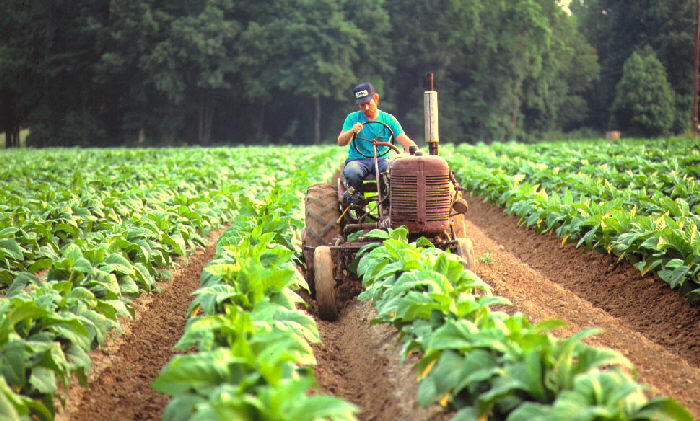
Tobacco farmer on tractor in tobacco field.